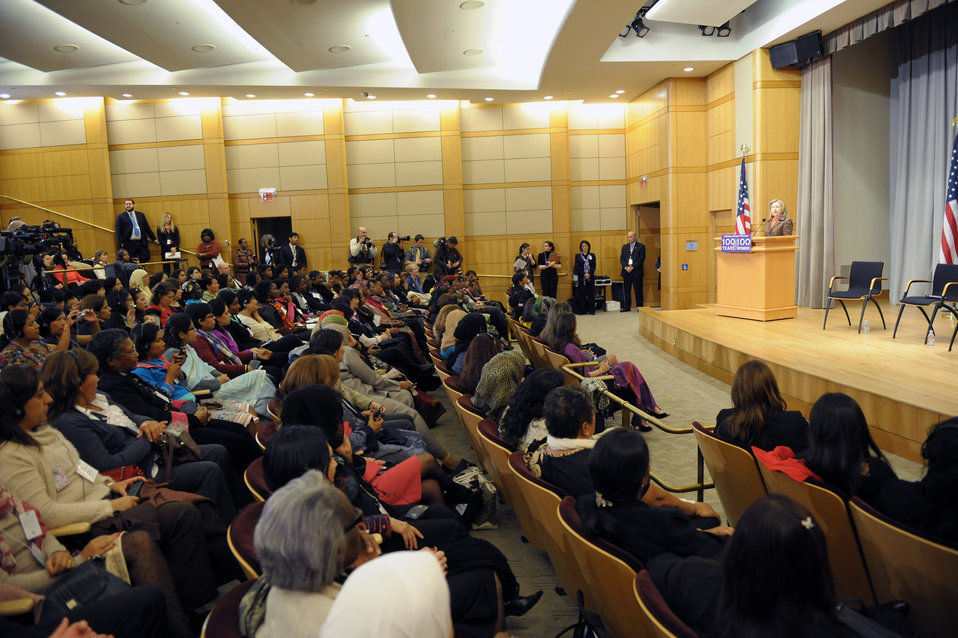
Secretary Clinton Launches the “100 Women Initiative: Empowering Women and Girls through International Exchanges'

U.S. Secretary of State Hillary Rodham Clinton launches the “100 Women Initiative: Empowering Women and Girls through International Exchanges' in the Marshall Conference Center at the U.S. Department of State in Washington, D.C., on March 7, 2011.